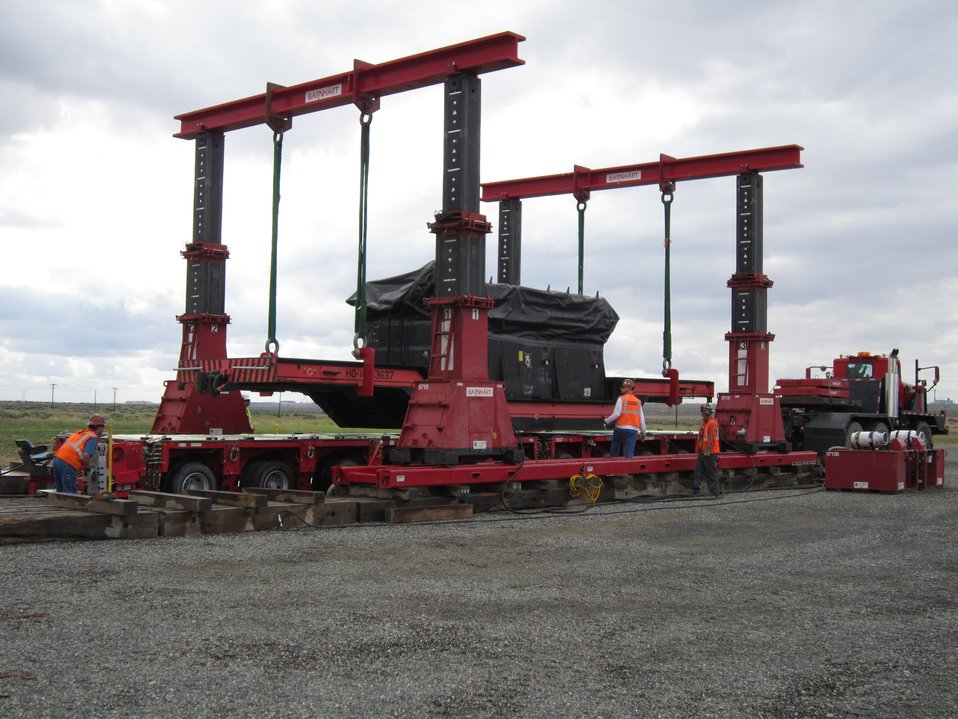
Recovery Act Invests in Cleanup, Preservation of Hanford Site Railroad

A pull-up gantry is used to hoist a cask car prepared for transport to Hanford’s Environmental Restoration Disposal Facility.